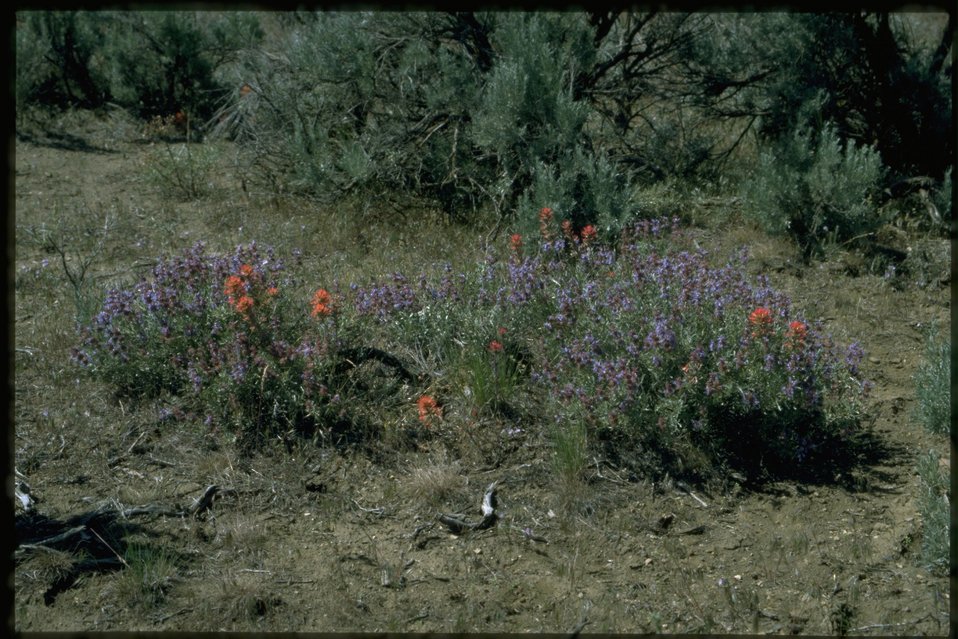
Medium shot of Castilleja and Salvia dorrii.